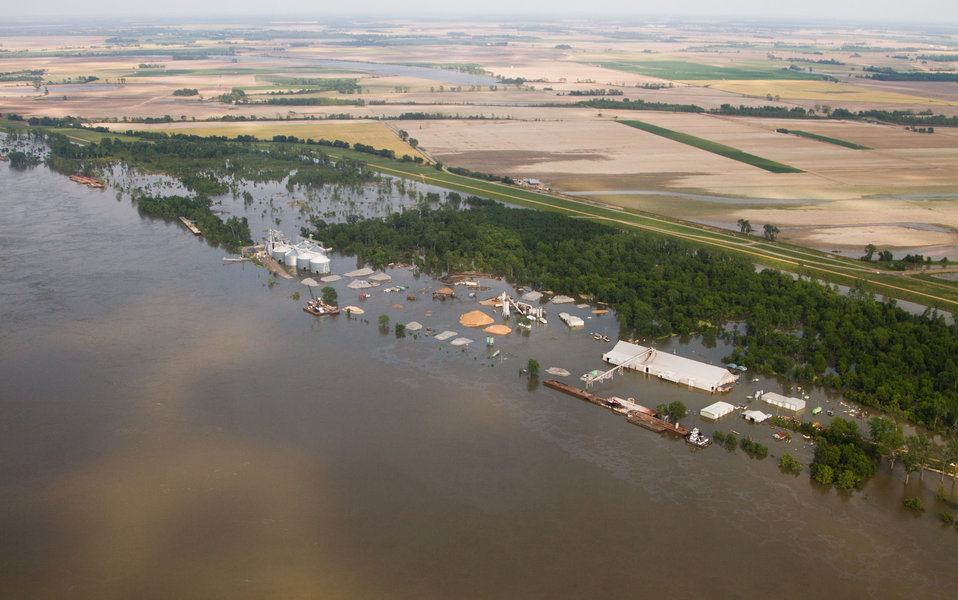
Aerial view of Mississippi River flood of farms, wilderness, and populated areas, on Thursday, May 19, 2011. from the MS side. Aerial platform was a UH-60 Blackhawk commanded by Col. Kennedy and his flight crew from the Army Aviation Support Facility #1 at Hawkins Field in Jackson, MS.